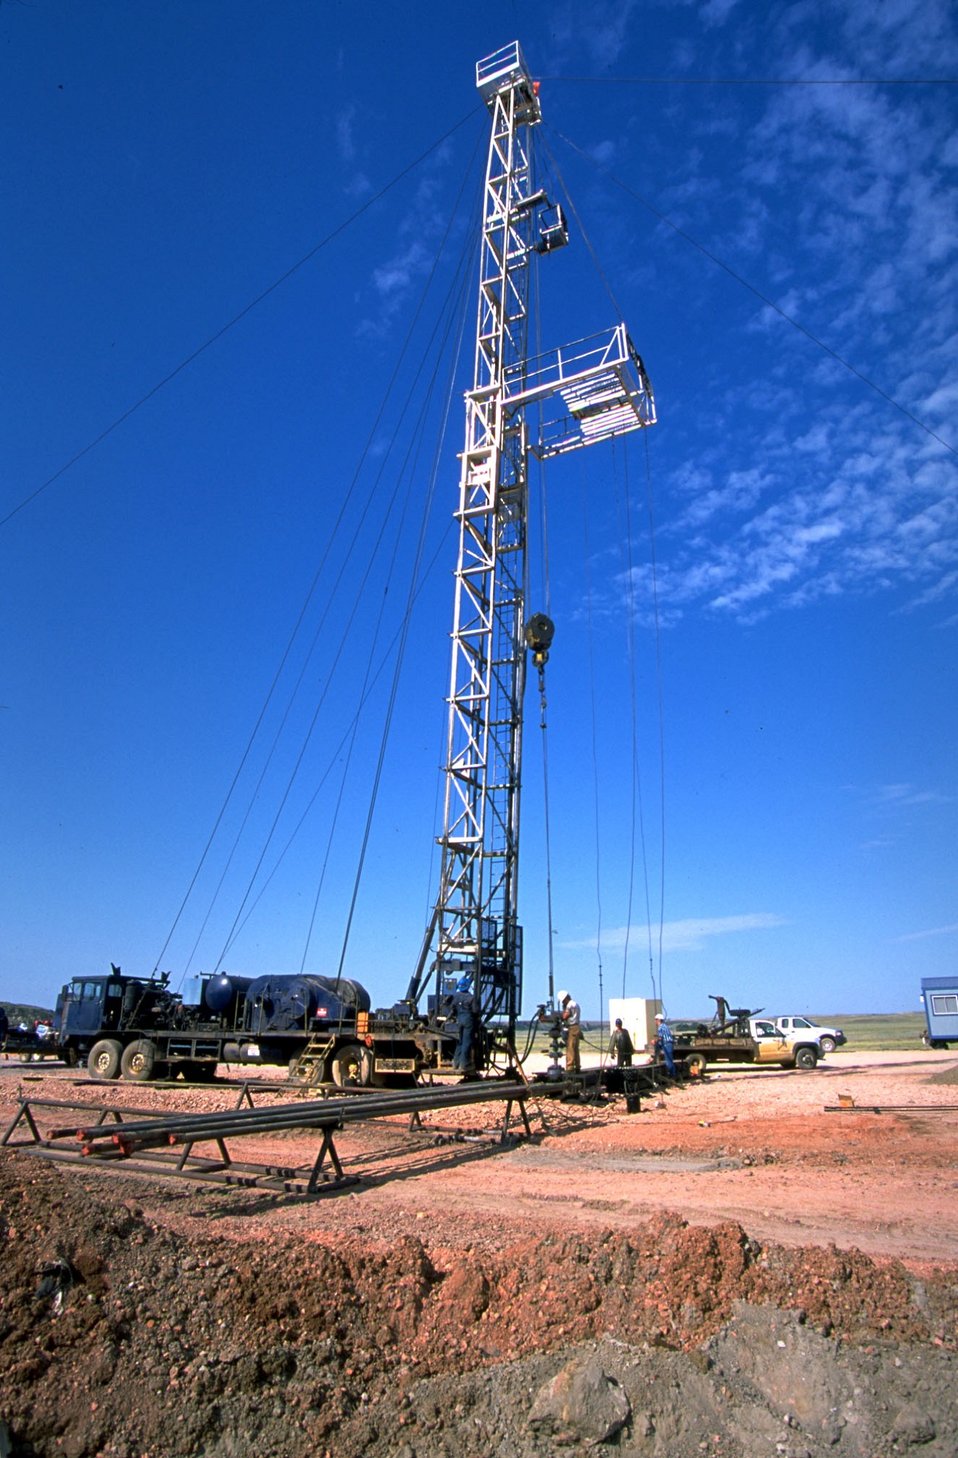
Oil drilling rig and workover rig on the same drilling pad